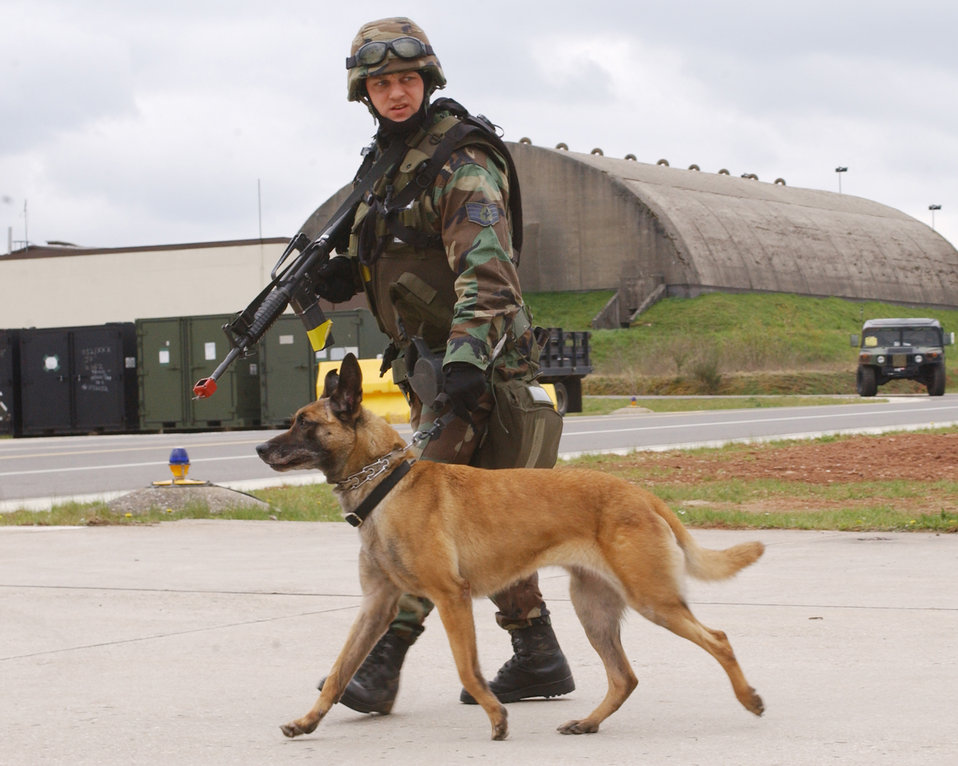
On the case

SPANGDAHLEM AIR BASE, Germany -- Staff Sgt. Todd Smith (left) and Rex complete a search after a breach of security at the entry control point here April 20 during exercise Harley Saber. Sergeant Smith is a security forces military working dog handler and Rex is a military working dog with the 52nd Security Forces Squadron.